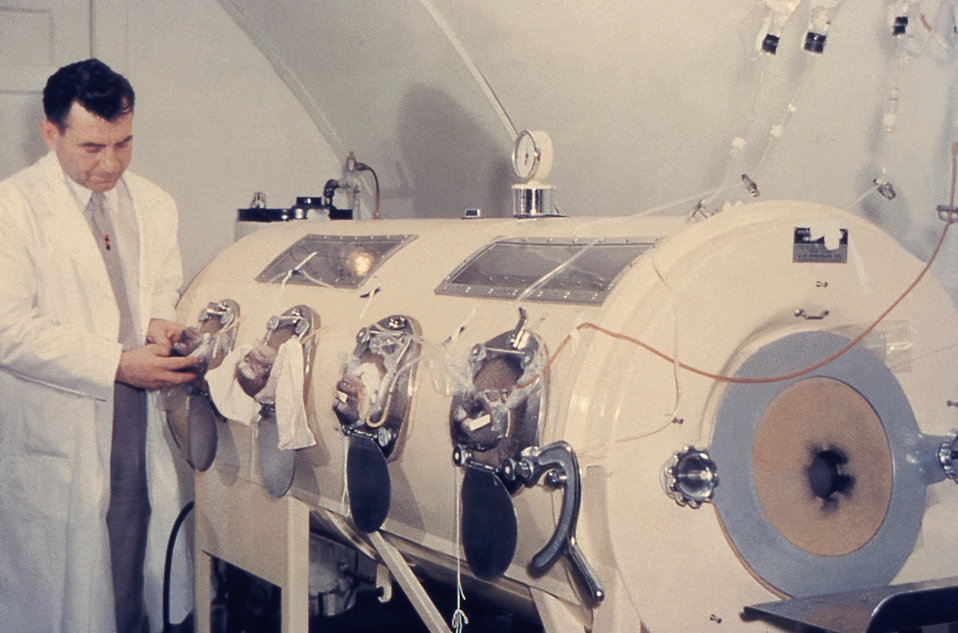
This historic photograph shows a technician calibrating an iron lung machine.